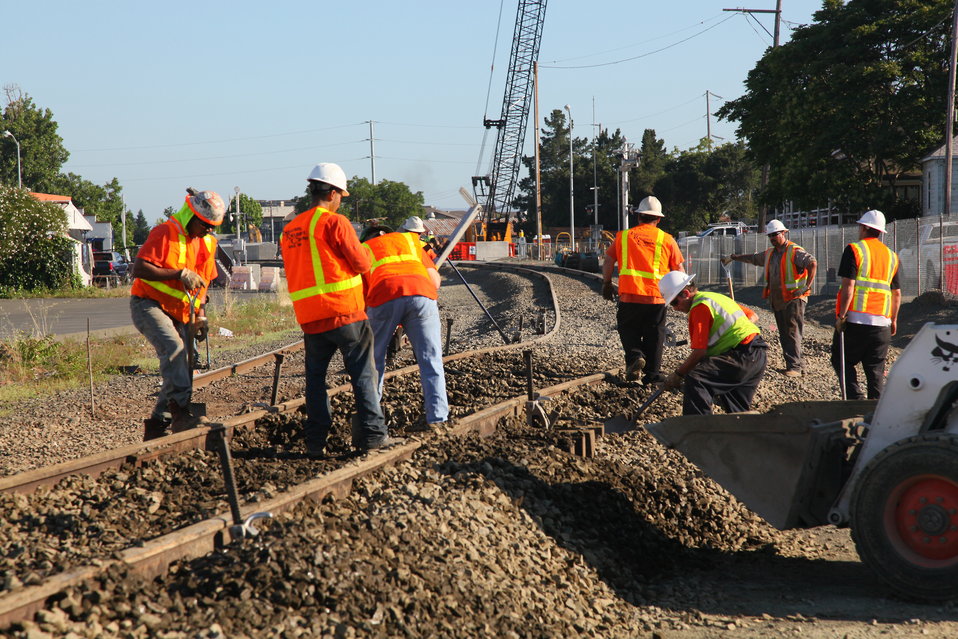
New railroad bridges open in Napa

Workers complete final grading of the approach to a new railroad bridge in Napa, Calif., before its official opening in a ceremony June 22, 2011. The U.S. Army Corps of Engineers Sacramento District built the bridge to replace a lower adjacent railroad bridge that blocked the Napa River in high water, often causing flooding in downtown Napa. The project is part of the larger Napa River-Creek Flood Protection Project, a joint effort of the Corps, the city of Napa, and the Napa Flood Control and Water Conservation District to reduce flood risk for the city.